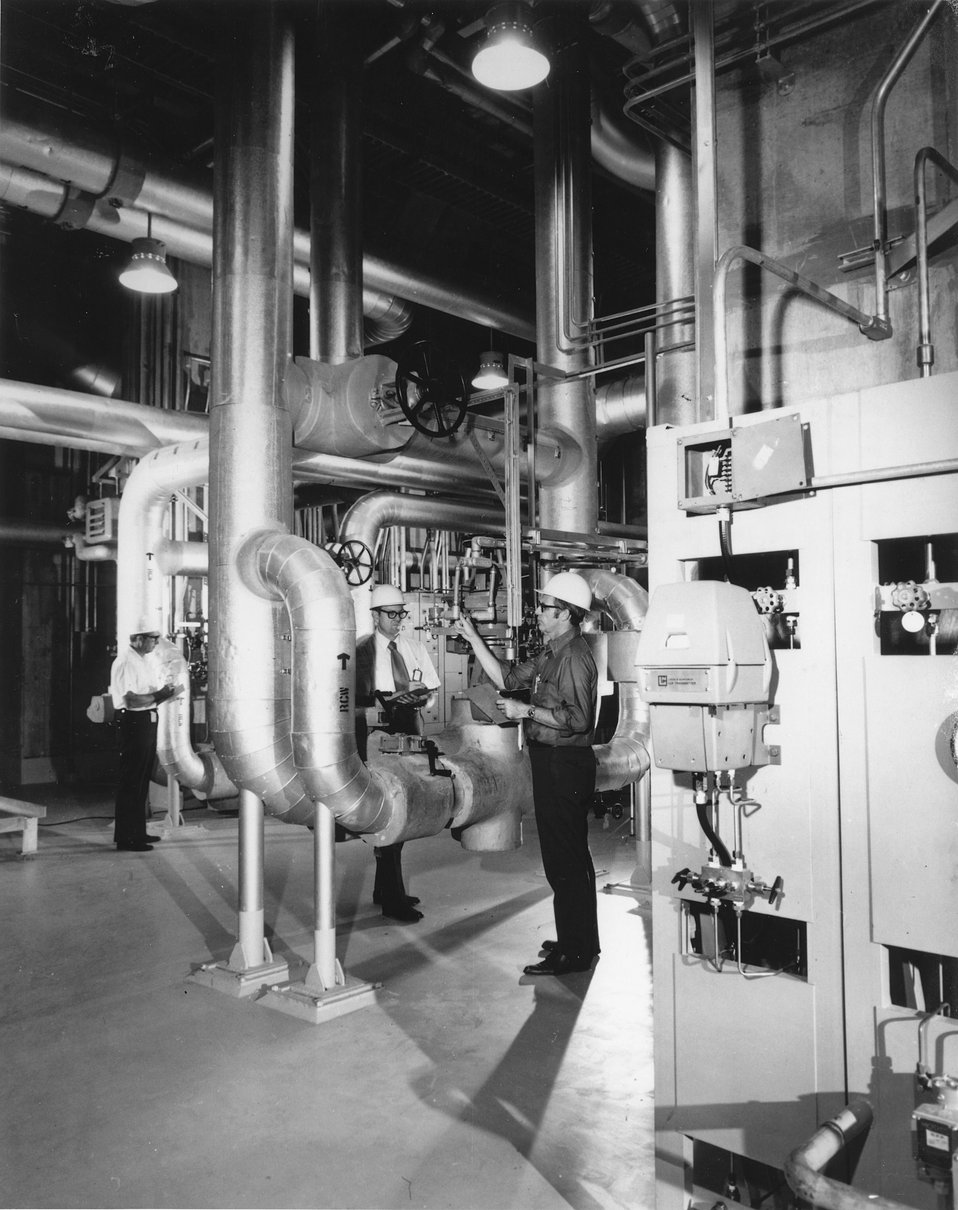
Government Inspectors At Nuclear Power Plants....Federal inspectors (1tr)A.K. Hardin, C.E. Murphy and W.S. Little, working out of DOE's regional office at Atlanta, Ga., check control air ducts (foreground) on a raw cooling water system in the Tennessee Valley Authority's Browns Ferry Unit 1 nuclear power plant near Decatur, Alabama. c. 1973